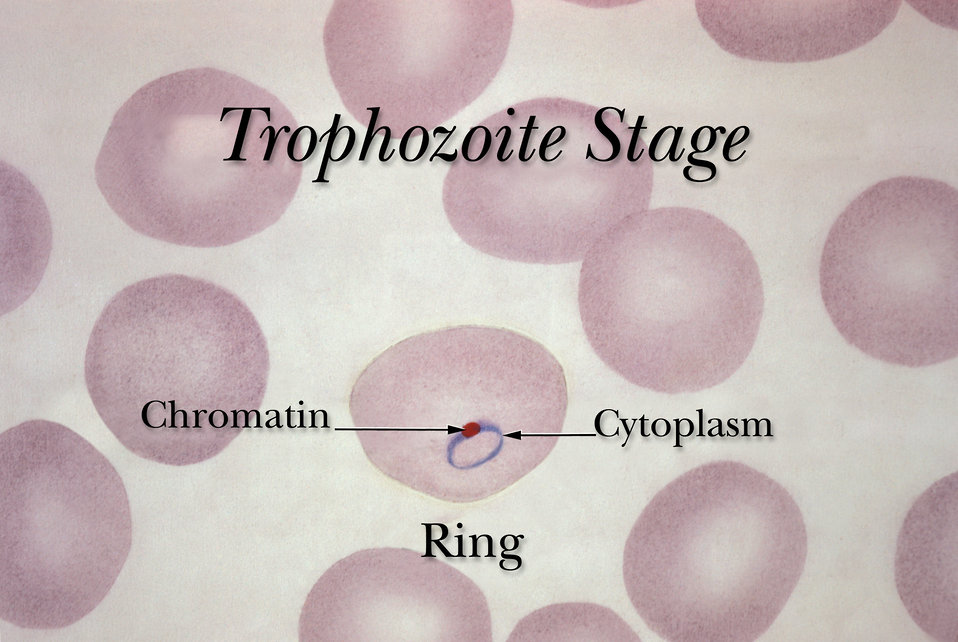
The "Ring Stage" of an erythrocytic trophozoite of the Plasmodium spp. life cycle.